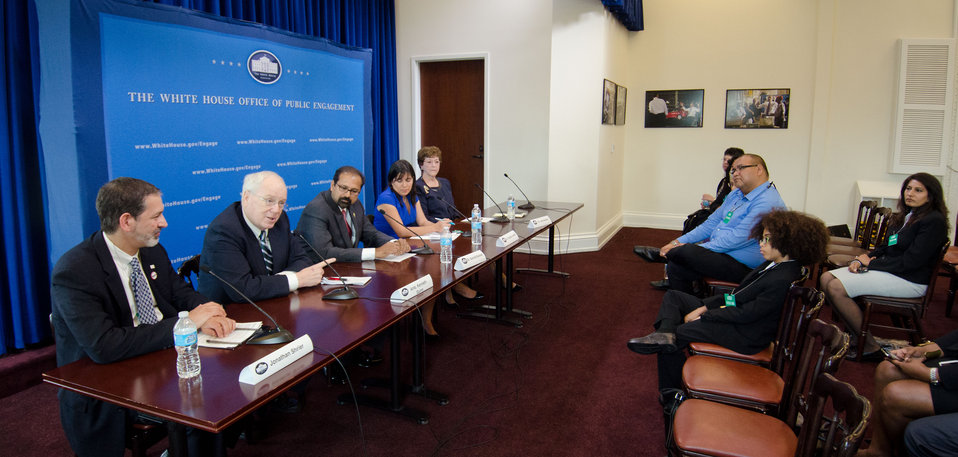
Former U.S. Ambassador to Cambodia and President of the World Food Prize Foundation Kenneth Quinn seems to make a comment to oshua’s Heart Foundation President Joshua Williams during the conclusion of the White House event honor eleven people for their efforts to reduce hunger and increase food security in the U.S. and internationally at the White House Champions of Change Strengthening Food Security at Home and Abroad Event held at the White House on Thursday, September 6, 2012, in Washington, D.C.